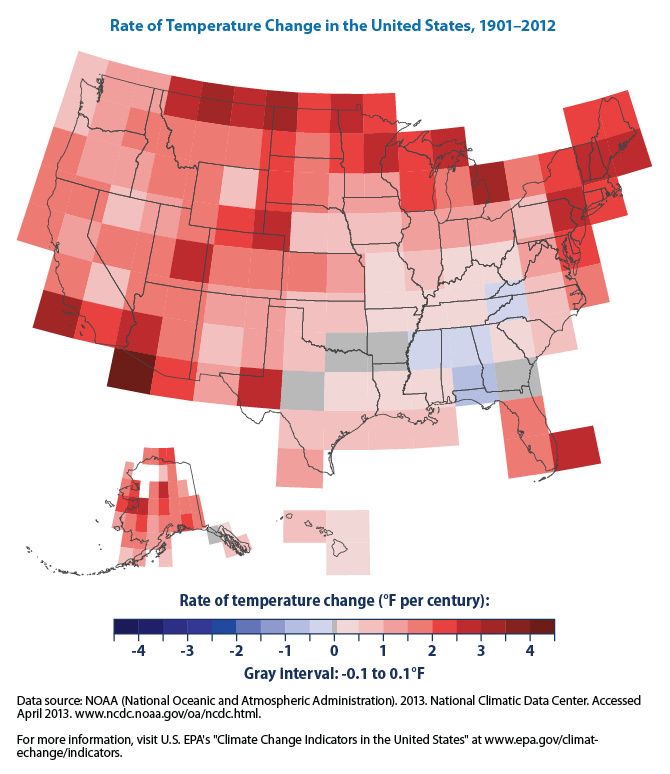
Climate Change Indicators - Rate of Temperature Change in the U.S.

Did you know? Average temperatures in the U.S. are changing. Read our Climate Change Indicators Report to learn more: epa.gov/climatechange/science/indicators/weather-climate/...